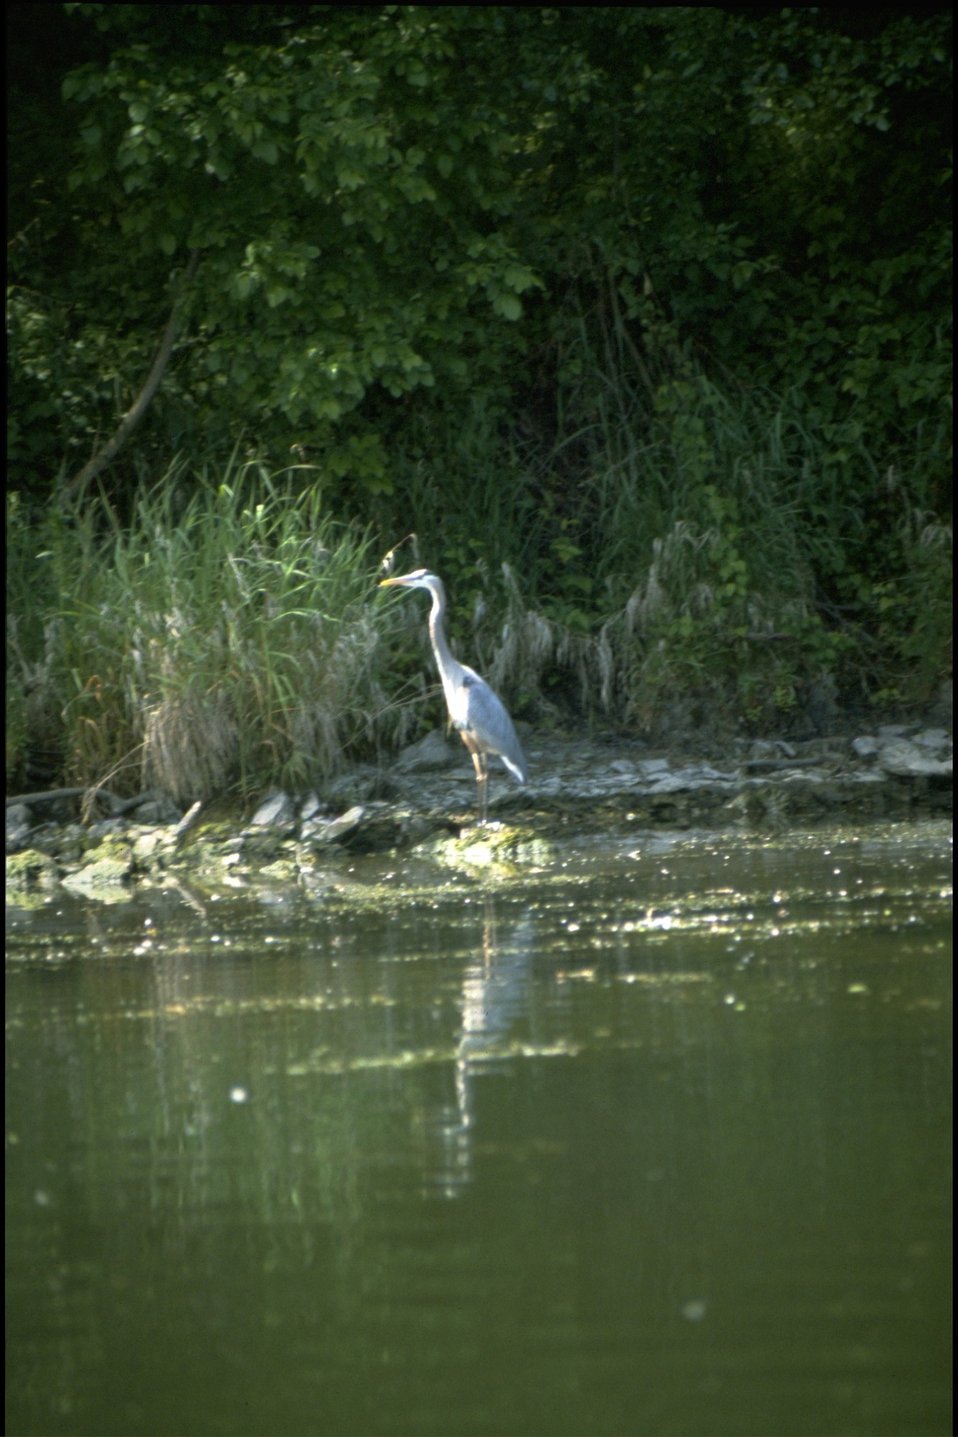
Rogue River - Great Blue Heron.